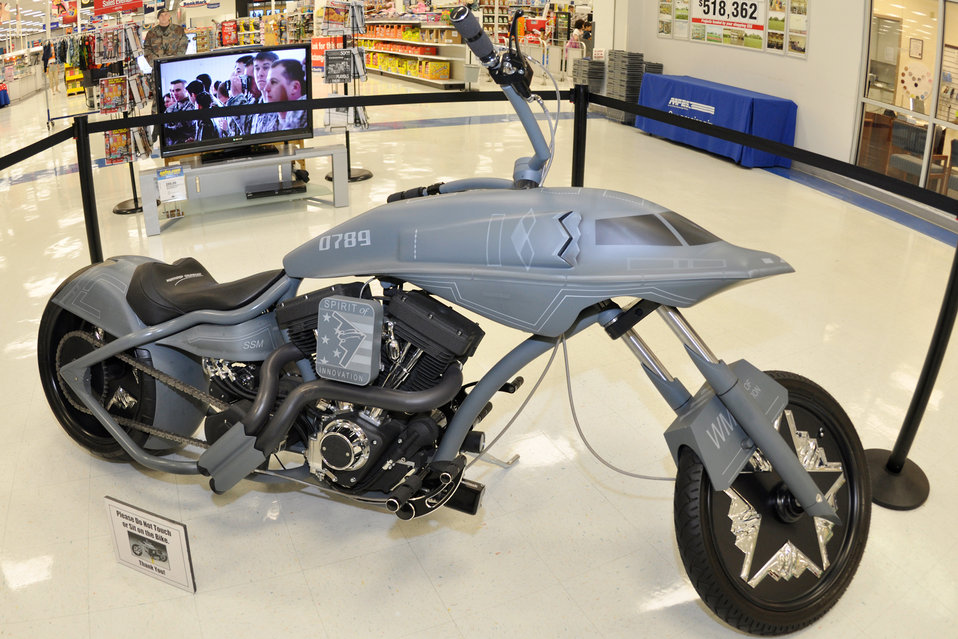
Stealth-y bike

Customers view the special B-2 Spirit motorcycle at the Base Exchange Aug. 12 at Barksdale Air Force Base, La. The bike was built by Orange County Choppers of Newburgh, N.Y., to commemorate the anniversary of the first flight of the B-2.